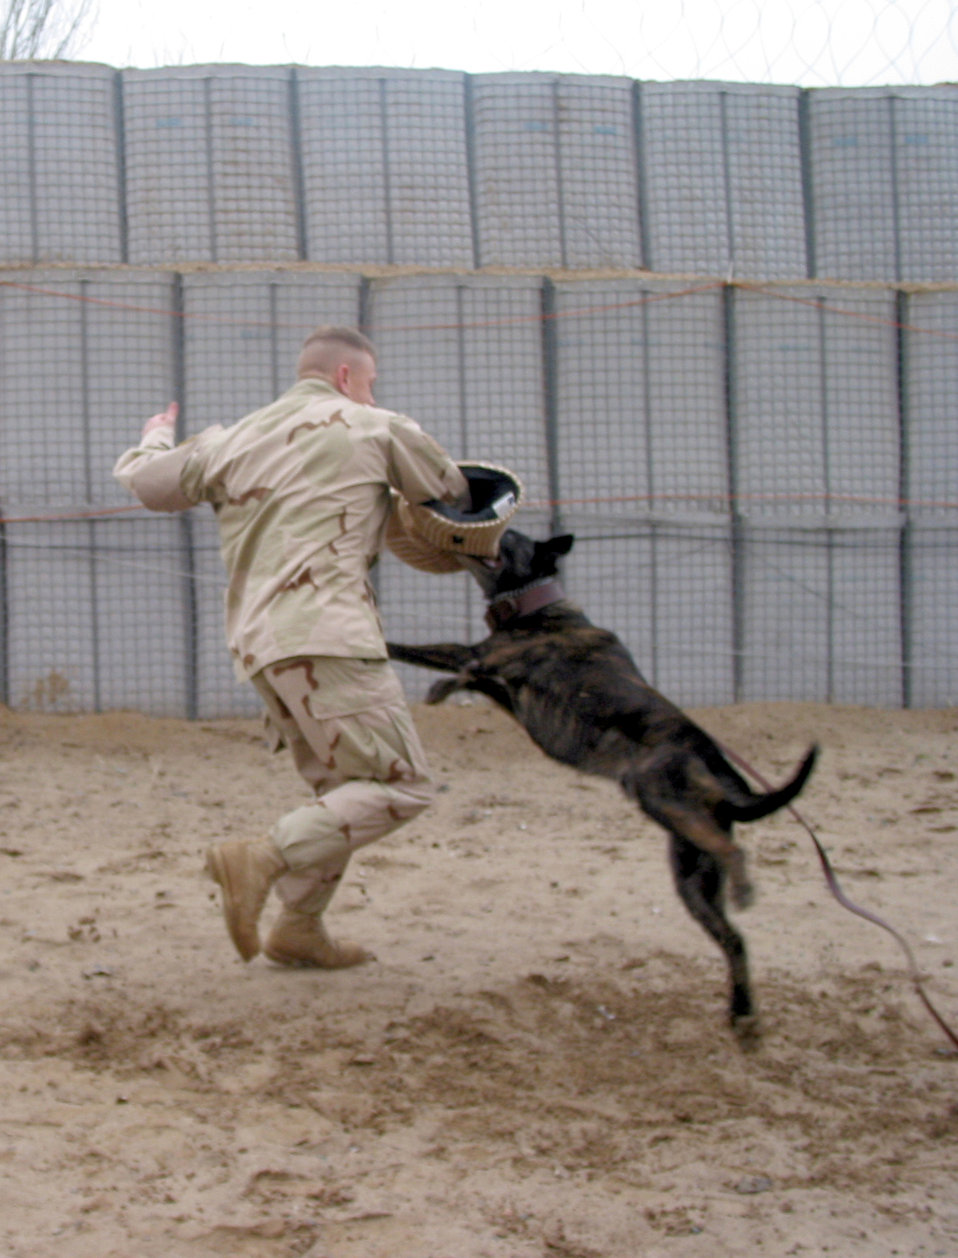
Dogs help secure base

MANAS AIR BASE, Kyrgyzstan -- Tech. Sgt. Robert Debrosse and Rocky, a military working dog here, conduct attack training at the MWD training area. Sergeant Debrosse is a dog handler with the 376th Expeditionary Security Forces Squadron.